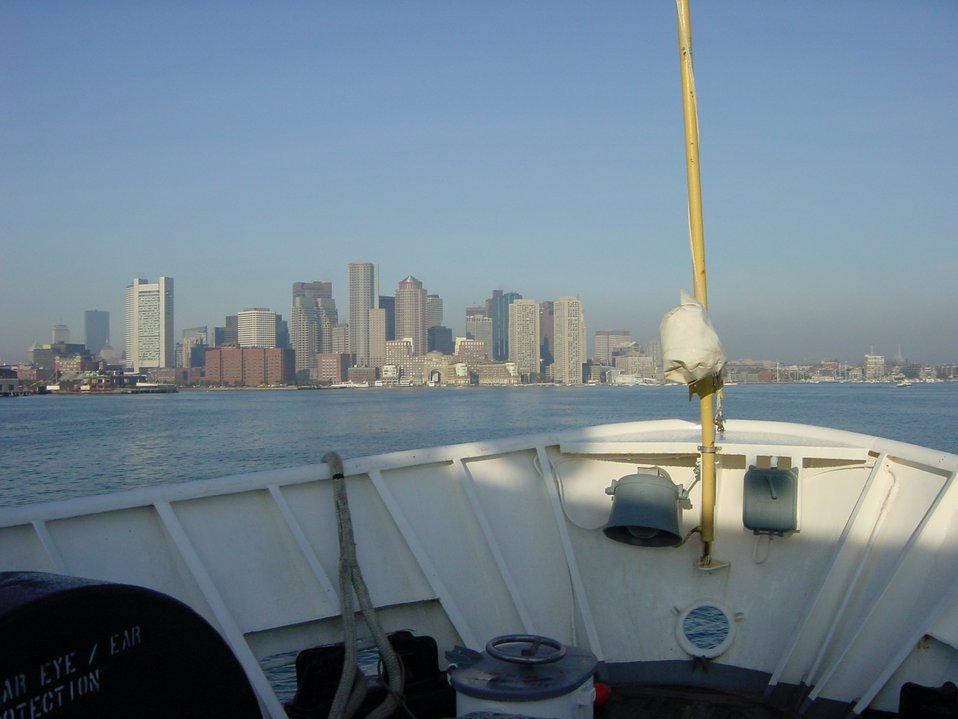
The Boston skyline as seen from the bridge of the NOAA Ship WHITING.